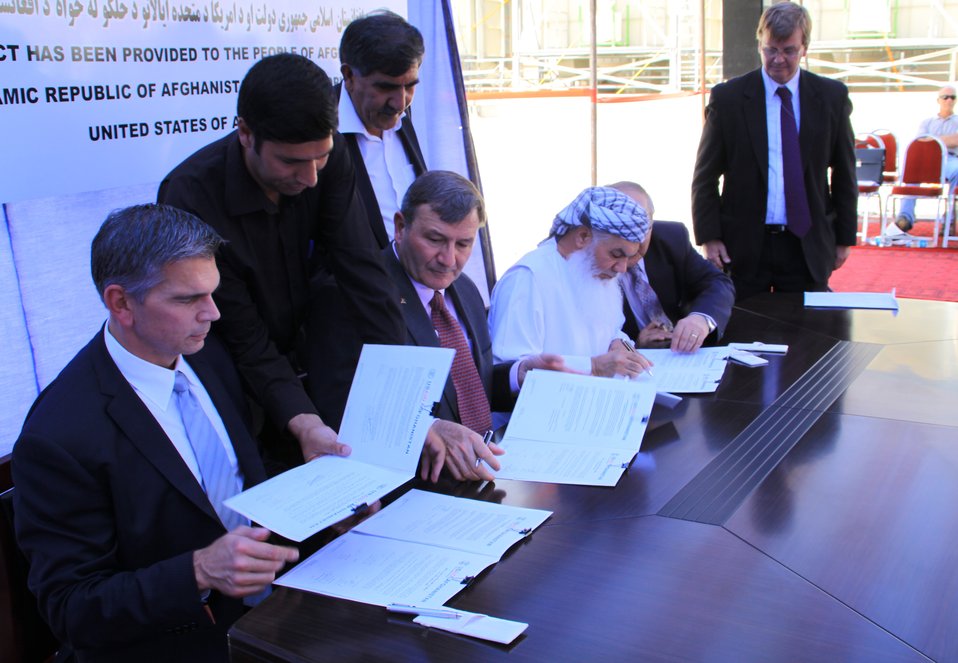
105 MW Tarakhil Power Plant Handover